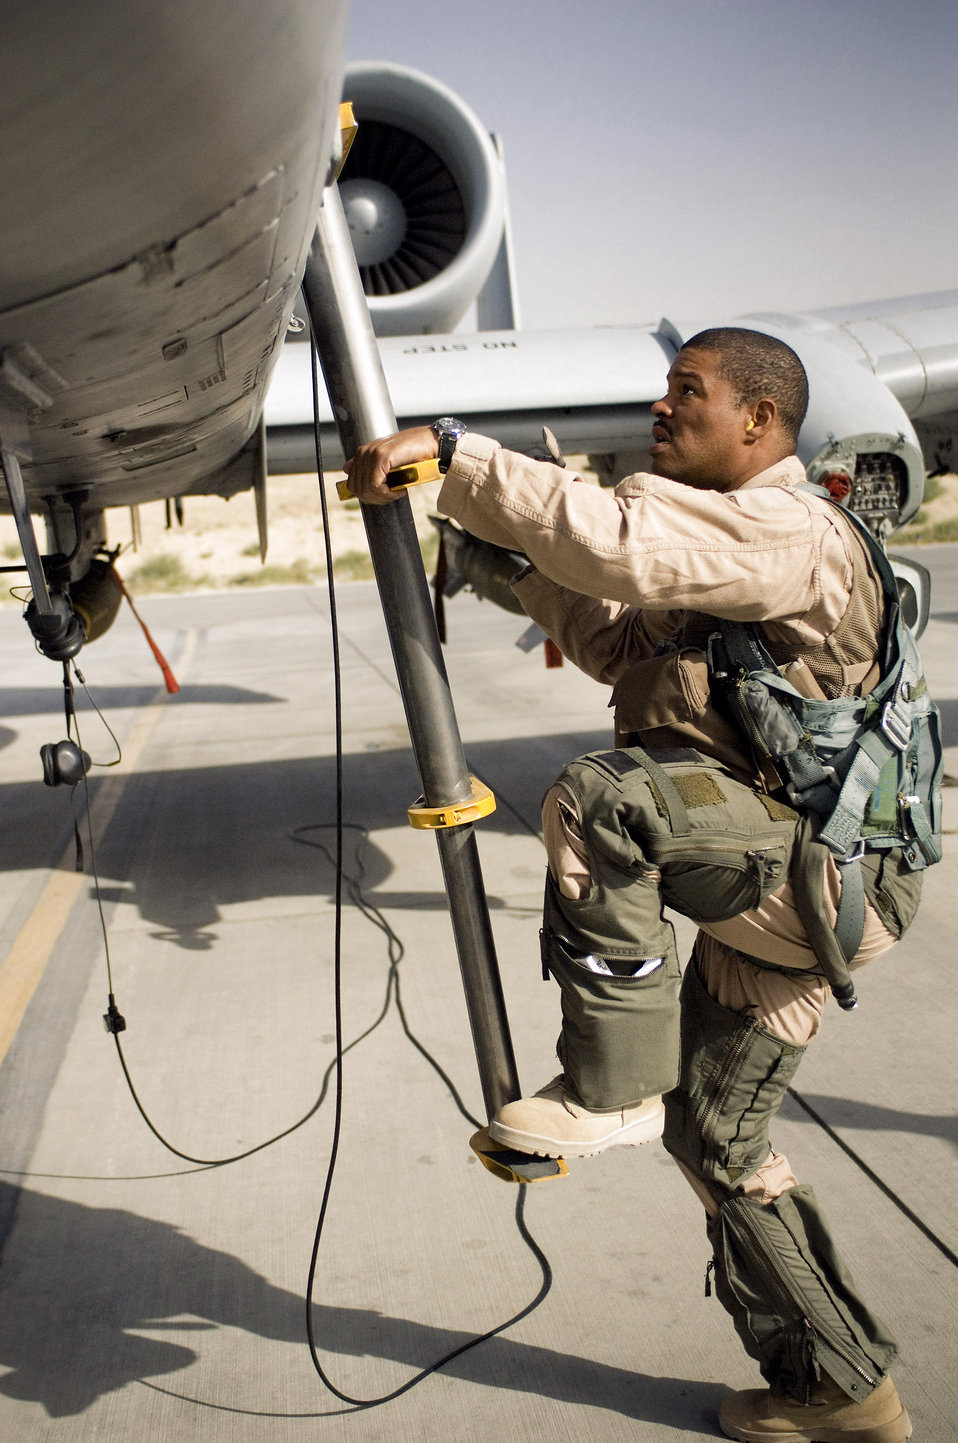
Willow Grove unit completes last A-10 deployment

Lt. Col. Thomas Fennell climbs aboard an A-10 Thunderbolt II prior to a mission at Bagram Air Field, Afghanistan, Sept. 12. Colonel Fennell is finishing up what will most likely be his last combat deployment with the A-10. As part of the 111th Fighter Wing, a Pennsylvania Air National Guard unit, the 103rd FS is scheduled to lose its aircraft in the spring of 2009. Colonel Fennell is a pilot with the 103rd Expeditionary Fighter Squadron.